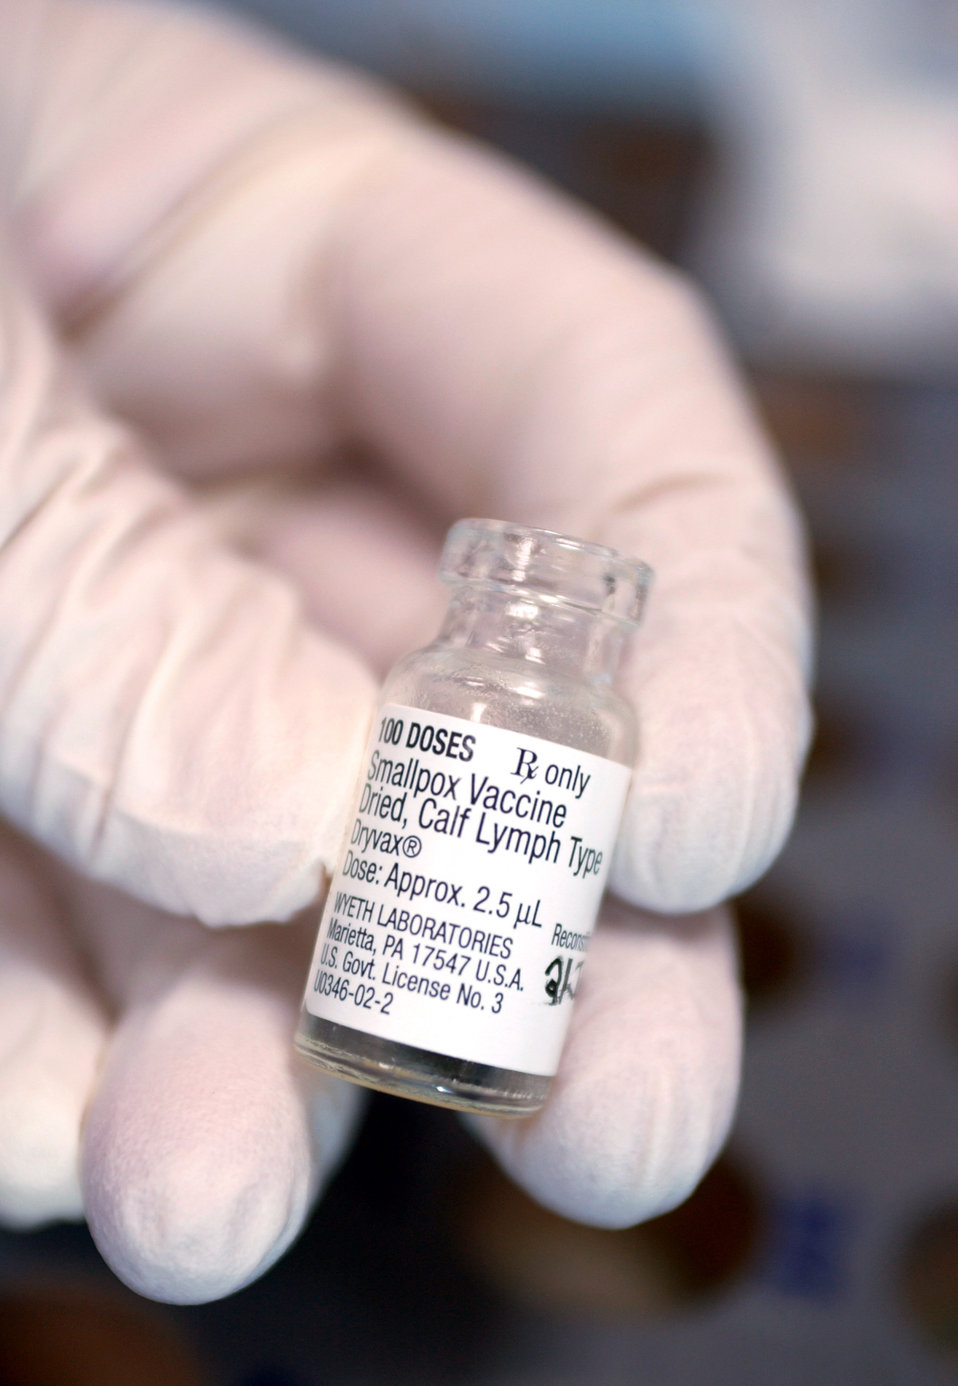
Doing shots

WASHINGTON -- Medical technicians in the Pentagon's health care clinic use vials of smallpox vaccine like this to immunize Pentagon employees.